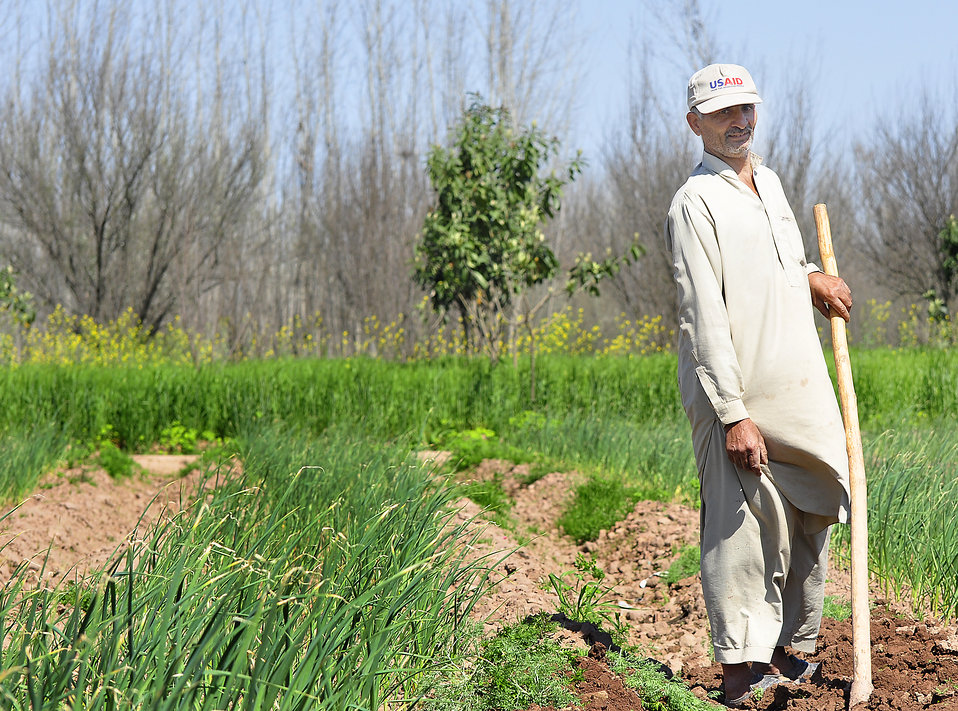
2011 March: USAID's Agricultural Recovery Program in 22 districts of Khyber Pakhtunkhwa, Punjab and Balochistan is an excellent example of the impact US development assistance can have. We have helped more than 500,000 farmers salvage the winter planting season and livestock after the floods. As a result, wheat farmers have nearly doubled their harvests. More than 5 million people have benefited. These photos show progress of the USAID Agricultural Recovery Project in Khyber Pakhtunkhwa.